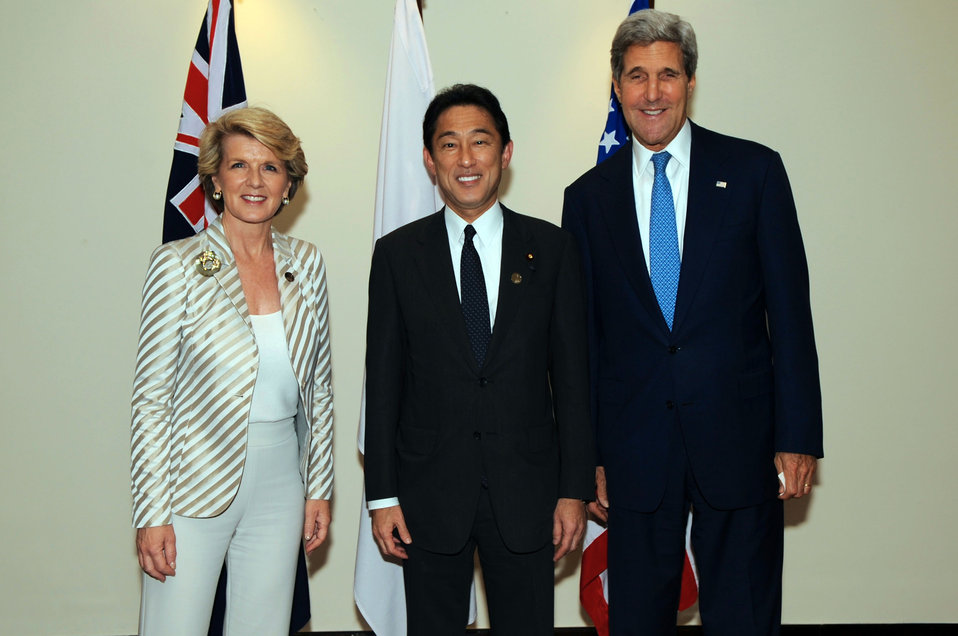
Secretary Kerry With Australian and Japanese Foreign Ministers Bishop and Kishida Before the Trilateral Security Dialogue

U.S. Secretary of State John Kerry poses with Australian Foreign Minister Julie Bishop, and Japanese Foreign Minister Fumio Kishida before the Trilateral Security Dialogue in Bali, Indonesia, on October 4, 2013.